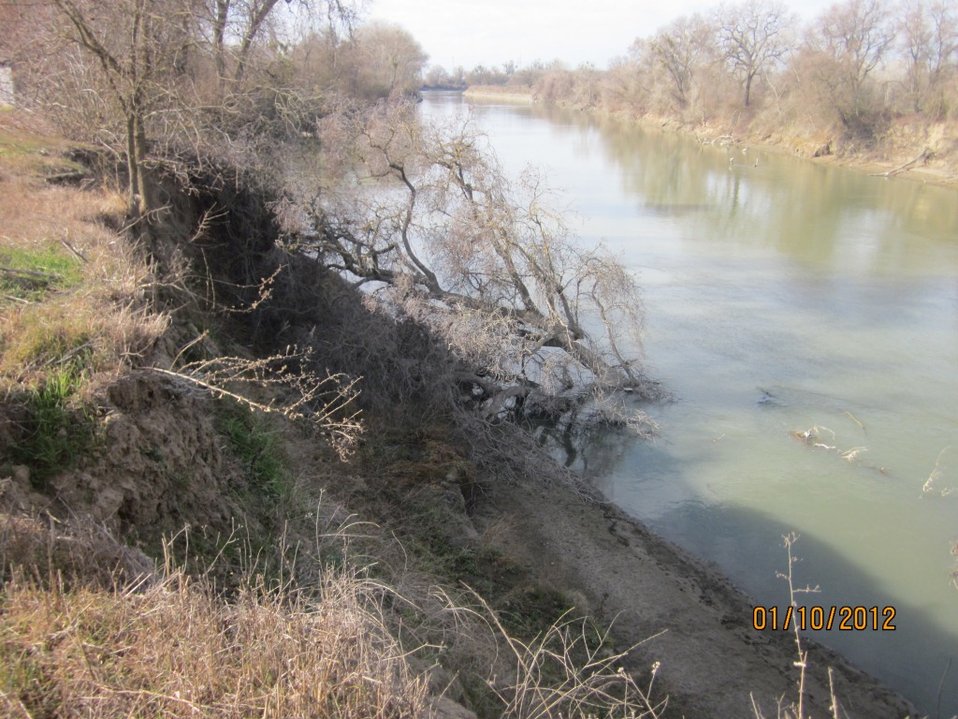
Erosion on Knights Landing levee

Levee erosion in the Knights Landing, Calif., area, shown during a levee inspection in 2012. The U.S. Army Corps of Engineers inspects levees in its Rehabilitation and Inspection Program to ensure levees don’t pose an unacceptable risk to lives and to provide levee managers and residents with detailed information on the condition of levees to help them make informed decisions about safety.